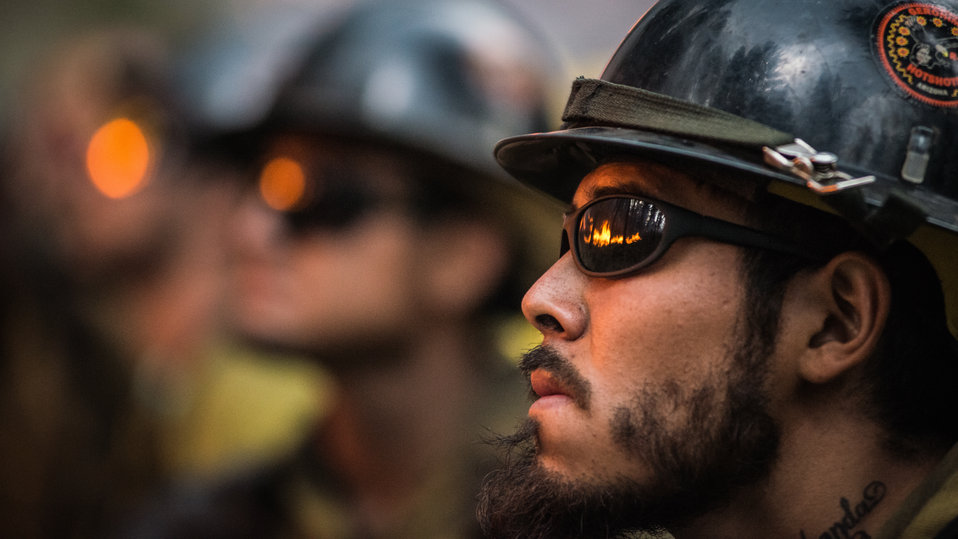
Geronimo Interagency Hotshot Crew, Department of the Interior (DOI) Indian Affairs (IA) Bureau of Indian Affairs (BIA) San Carlos Agency in Arizona; on assignment at the Big Windy Complex Wildlands Fire, approximately 15 miles west of Interstate-5 and East Northeast of Galice, Oregon, conducts a prescribed burn 'burnout' operation to help stop the main fire that may head toward this roadway, on Friday, Aug 9, 2013. The primary mission of the Interagency Hotshot Crews (IHC) is to provide a safe, organized, mobile and highly skilled hand crew for all phases of wildland fire suppression. The arduous duties and specialized assignments required of IHC personnel require uniform staffing, certification, training, equipment, communications, transportation, organization, and qualifications that adhere to interagency standards and guidelines.